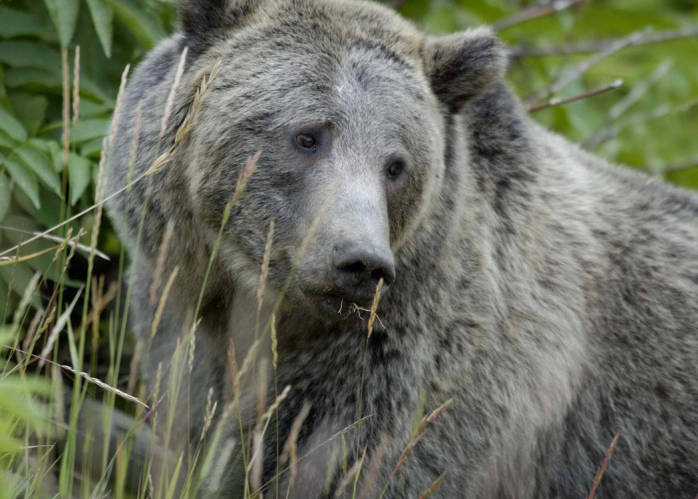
grizzly bear